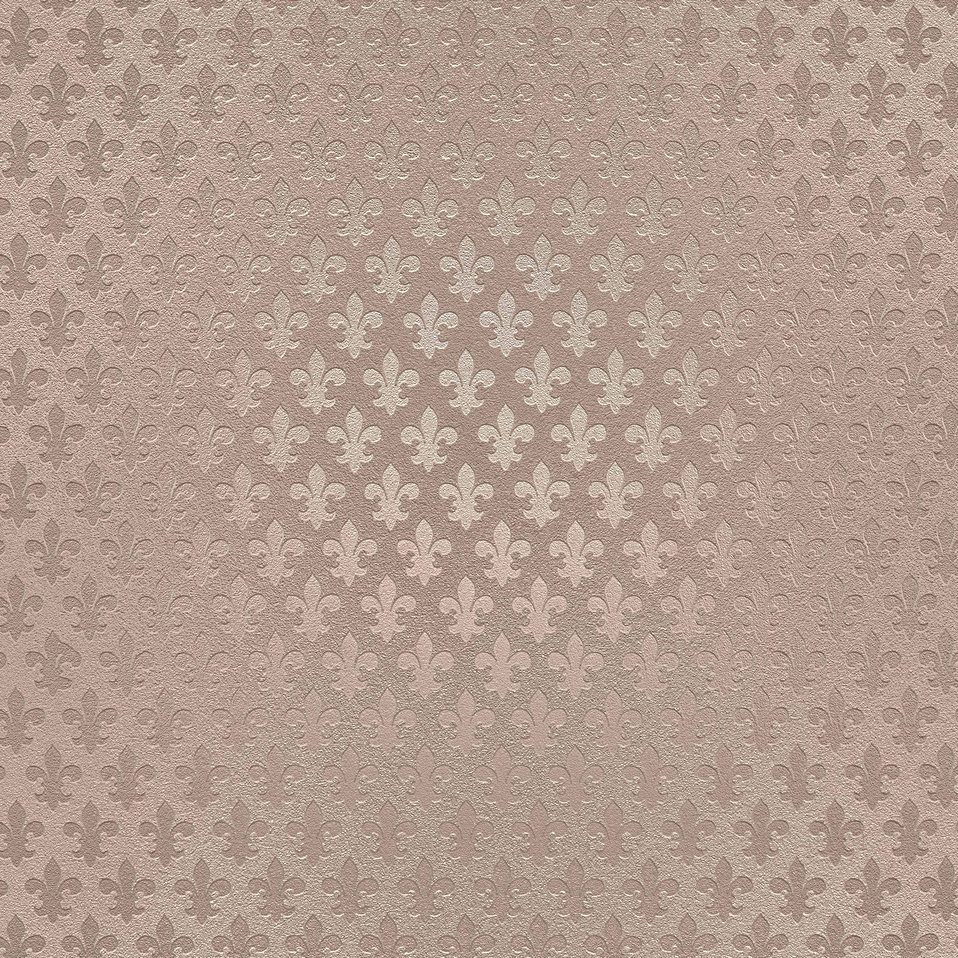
Paper fleur de lys (2)

Patterned paper lily flower textured tone on tone beige.